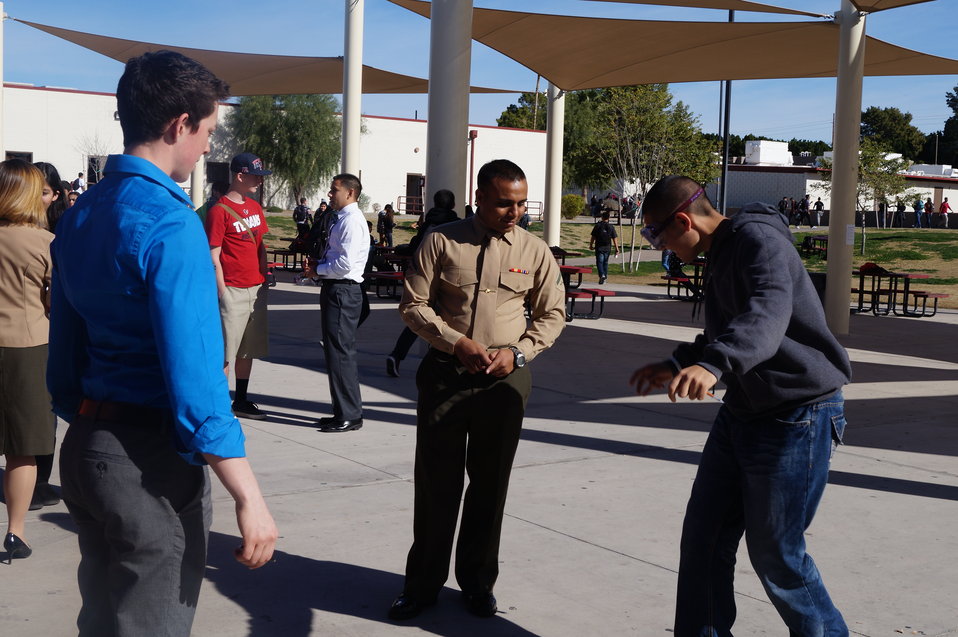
Nationa Drug Facts Week - KOFA HS

The Drug Demand Reduction Program out of Yuma, Arizona held numerous events at local schools to support NIDA's National Drug Facts Week, Jan. 27-Feb. 2 2014. Teens participated in drug awareness games, and helped to Shatter the Myths about teen substance abuse.